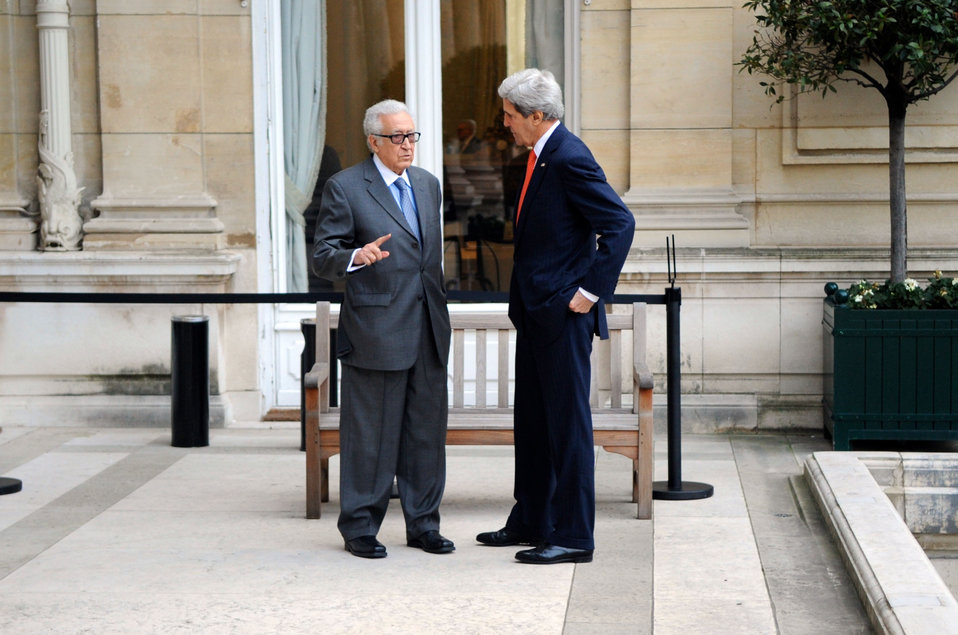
Secretary Kerry Holds a One-on-One Discussion With U.N. Special Representative Brahimi

U.S. Secretary of State John Kerry and United Nations Special Representative for Syria Lakhdar Brahimi hold an impromptu one-on-one meeting on the back patio of the U.S. Ambassador's Residence in Paris, France, on January 13, 2014.